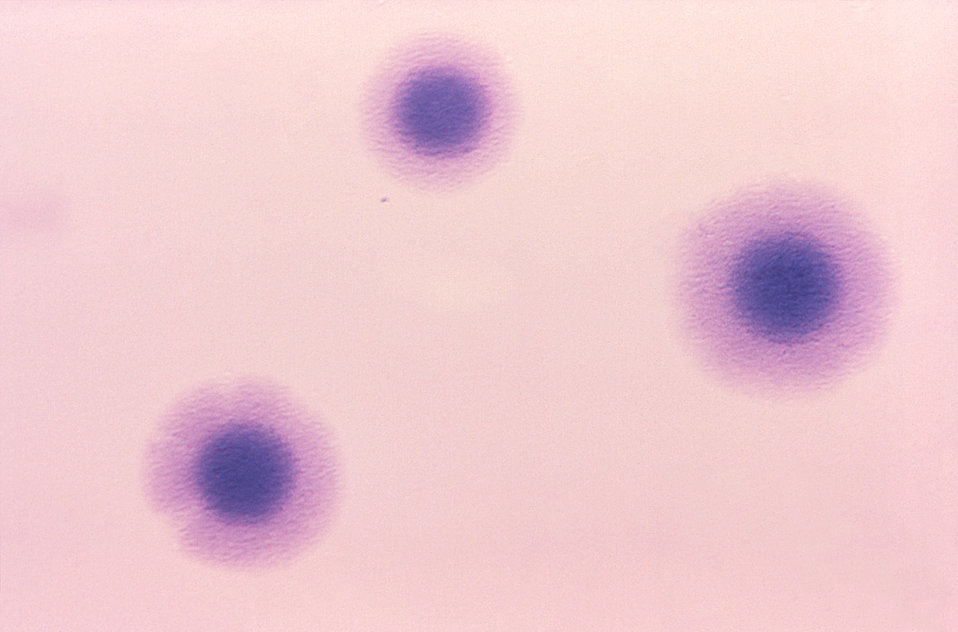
This photograph depicts a number of Gram-negative Mycoplasma hominis, and T-strain Mycoplasma isolates, which had been grown on agar medium.